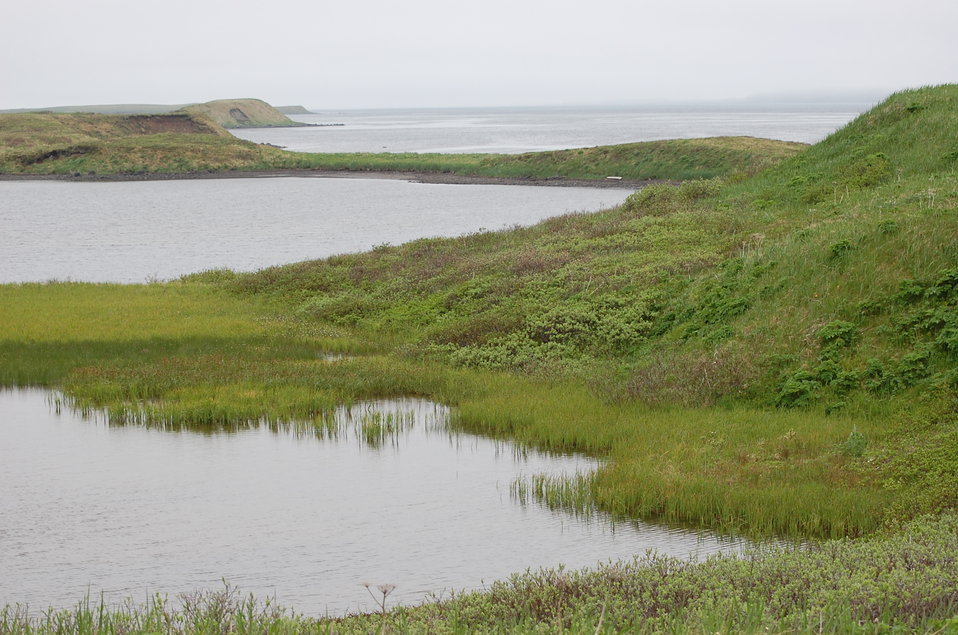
Wetlands near Grant Point

Izembek National Wildlife Refuge